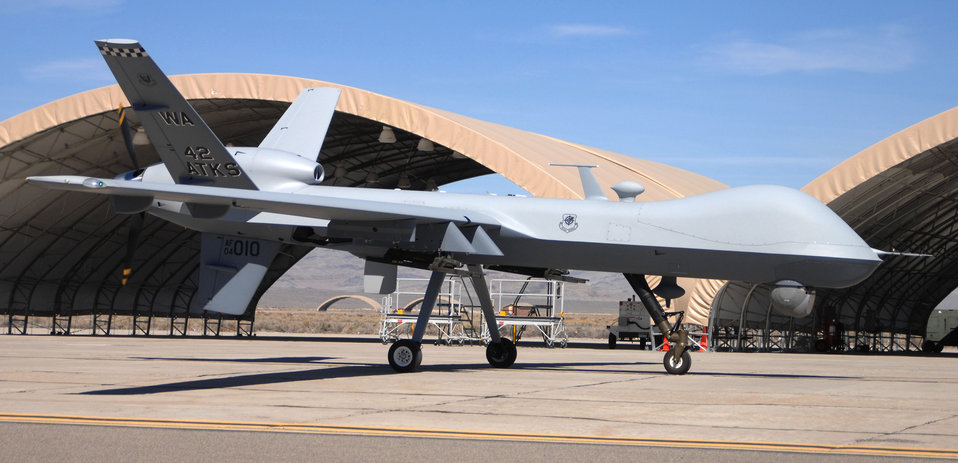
Air Force stands up first unmanned aircraft systems wing

The MQ-9 Reaper taxies into Creech Air Force Base, Nev., home to the newly reactivated 432nd Wing. The 432nd Wing consists of six operations squadrons and a maintenance squadron for the Air Force fleet of 60 MQ-1 Predator and six MQ-9 Reaper unmanned aerial vehicles.